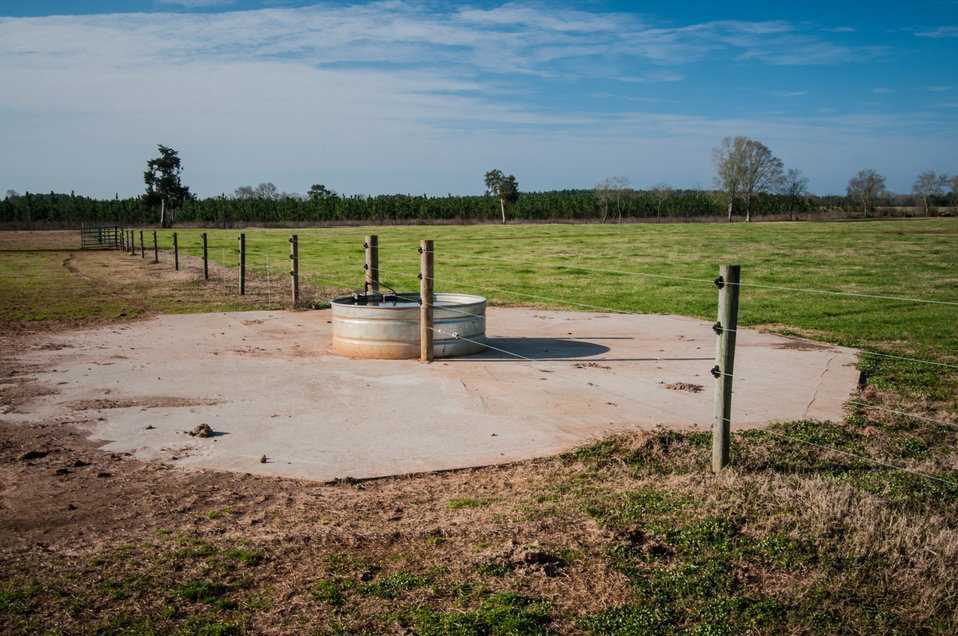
One of concrete pad installed around a watering trough that prevents soil erosion on Banamacc Farms in Edison, Calhoun County, GA on Mar. 7, 2013. Banamacc Farms owner Raul Moreno conservation plan calls for cross fencing and concrete pads around watering troughs. Moreno was able to secure funding for the improvements with a USDA NRCS Environmental Quality Incentive Program (EQIP) contract. Moreno mentioned, “NRCS provided me with specifications and designs that assisted me in installing conservation practices that will last for many years to come.” The USDA Strike Force Initiative has designated Calhoun County, GA as a Strike Force county selected to receive assistance to relieve persistent poverty in historically high-poverty counties.